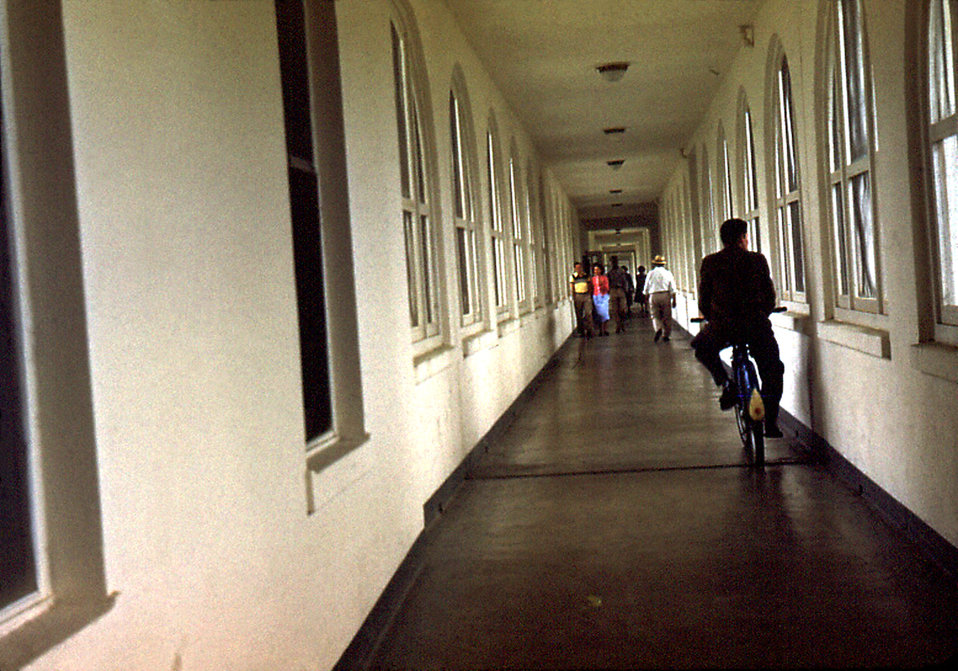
In this historic image, one of the corridors outside the Carville, Louisiana Leprosarium's infirmary was highlighted. The facility featured approximately two and a half miles of these corridors, located on two floors. Like the bicyclist seen in this photograph, those patients who owned bicycles rode their bikes from their rooms to the infirmary, and back again."Patients of the U.S. Marine Hospital in Carville, Louisiana, produced this set of 35 mm slides around 1950. In 2002, a patient's son donated the set, the only one known in existence, to the museum. The father, a patient at Carville for several years, brought these slides home around 1950 to give his family a snapshot of life at the national leprosarium. The act of quarantining patients for leprosy (HD) remained law in the state of Louisiana until 1957."